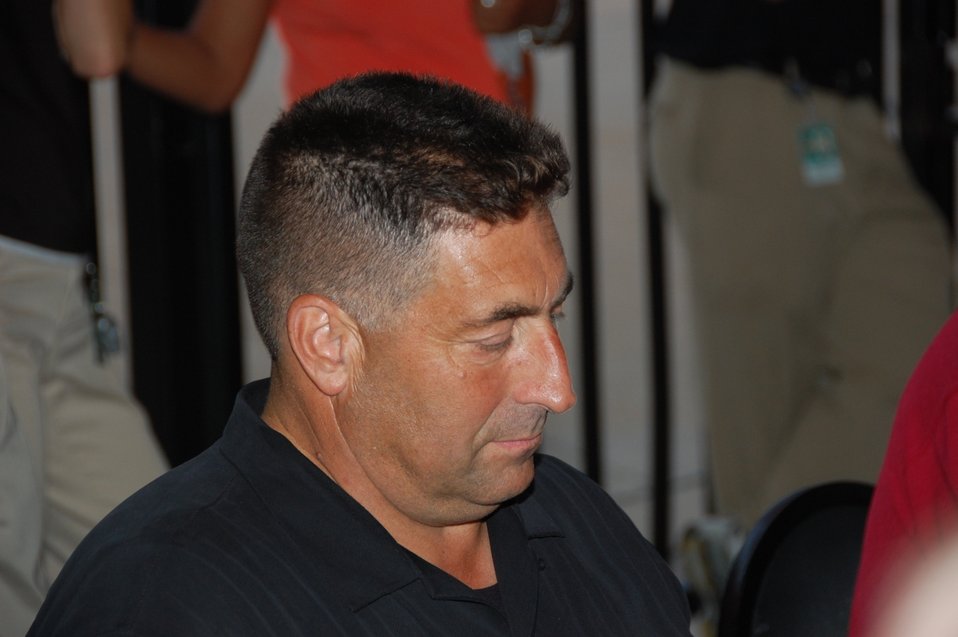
Dan Morogiello at 25th Anniversary of Orioles' 1983 World Series Championship